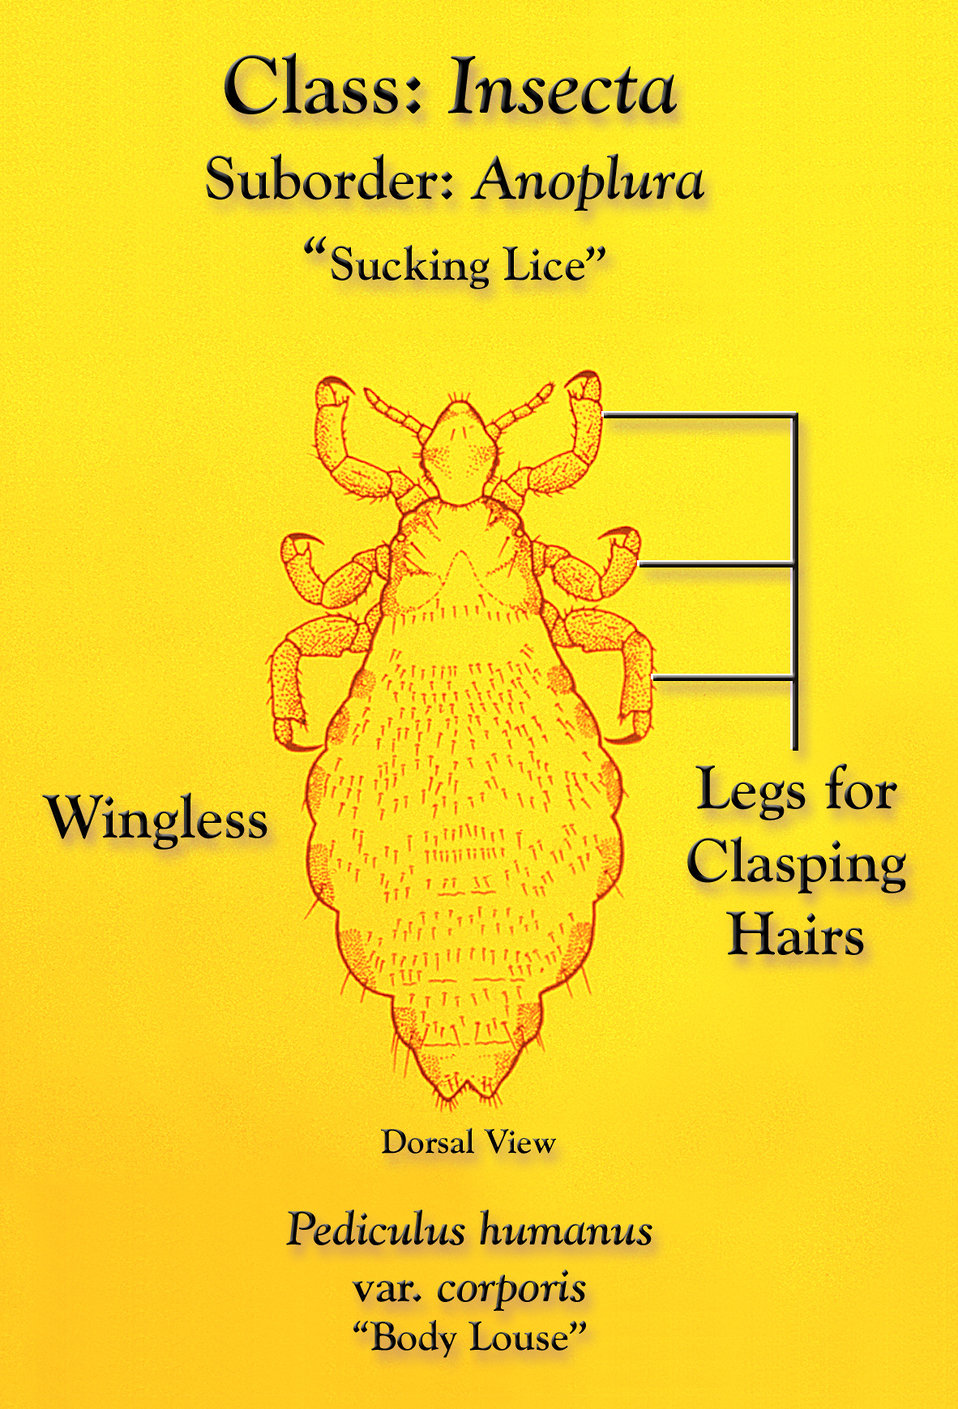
This illustration depicts some of the morphologic characteristics found in a 'sucking louse', Pediculus humanus var. corporis, of the Order Annoplura.